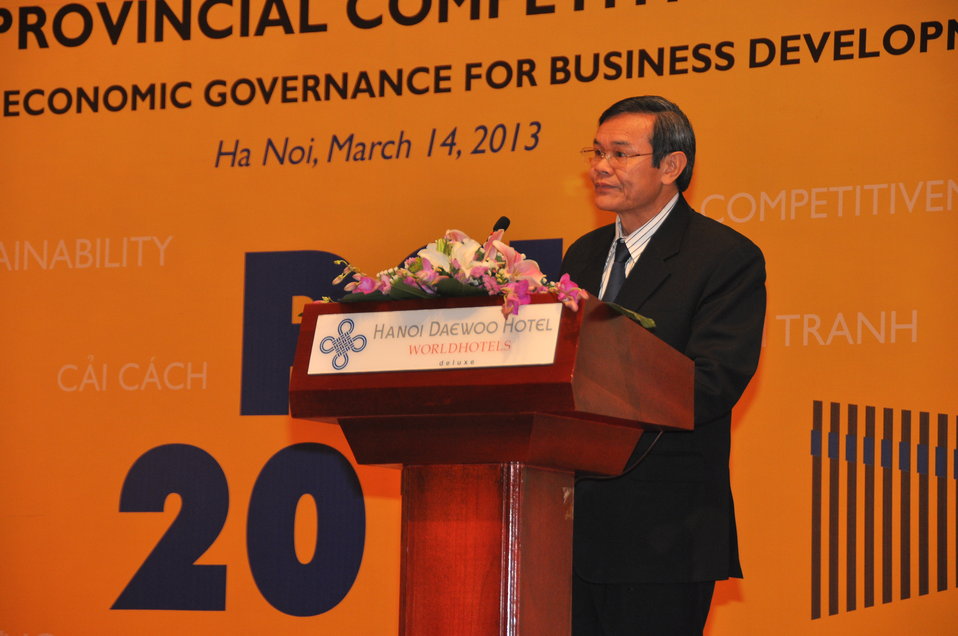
Provincial Competitiveness Index Launch, March 14, 2013

Hanoi, March 13, 2013